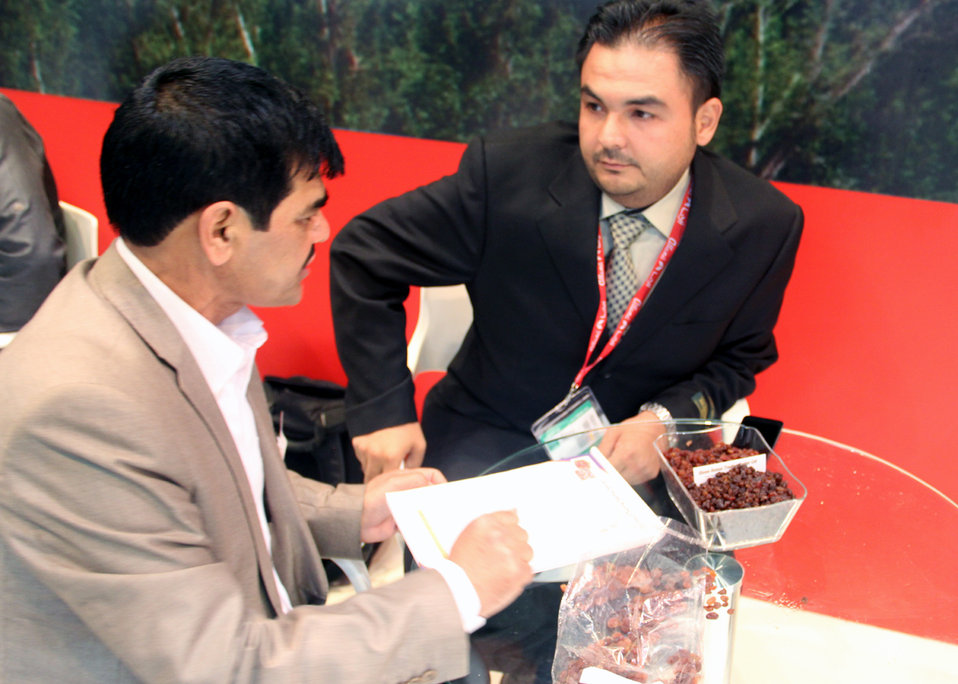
A Saudi Arabian buyer negotiates a possible deal with an Afghan businessman for the country’s raisins. Afghan traders signed deals worth more than $2 million dollars during the first two days of the exhibition.